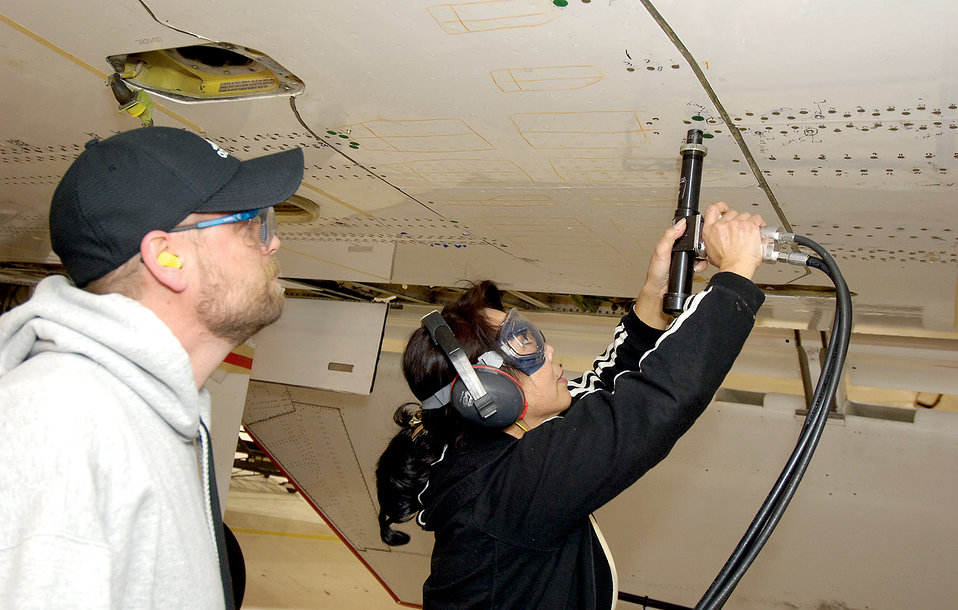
Navy E-6 service life extended

Eric Dart and Kimberly Nguyen strengthen the wings on a Navy E-6 so it will better endure stress from the angle the jet assumes during missions June 11, 2010 at Tinker Air Force Base, Okla. Dart and Nguyen are sheet metal mechanics in the 566th Aircraft Maintenance Squadron.